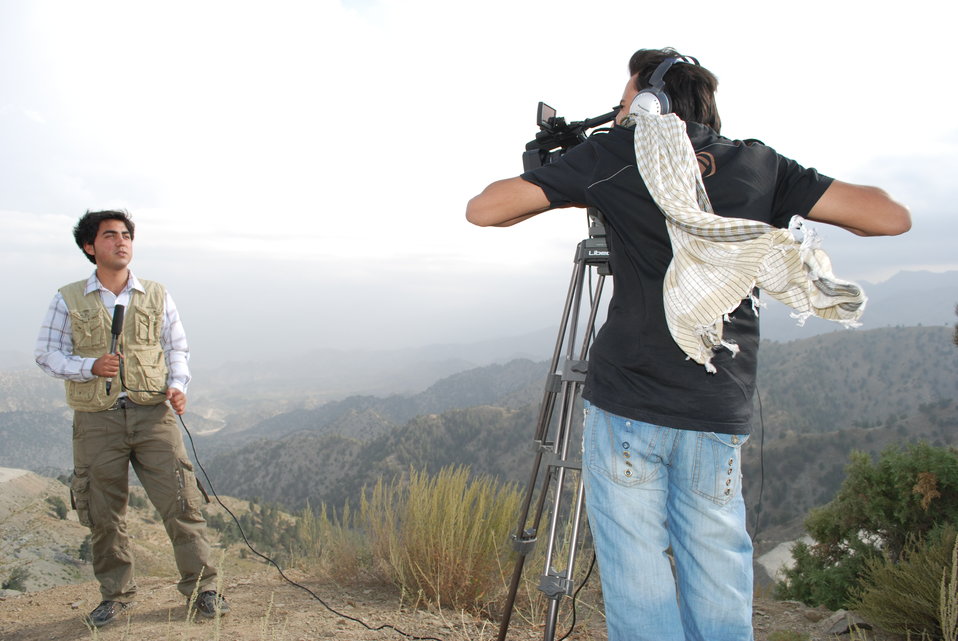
'On the Road' in Paktya Province